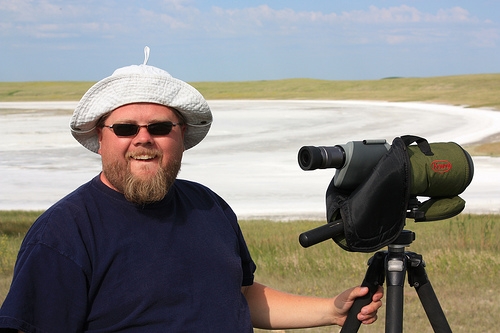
Lostwood National Wildlife Refuge

An avid birdwatcher at Lostwood National Wildlife Refuge in North Dakota.